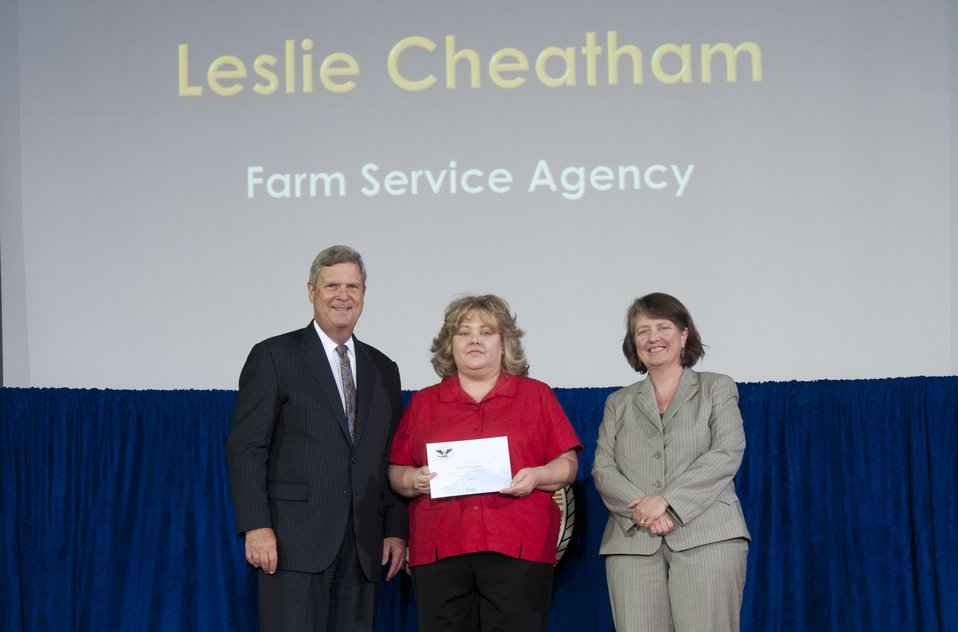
Leslie Cheatham, Farm and Foreign Agricultural Sercive is presented the Gold Presidential Volunteer Service Award by Agriculture Secretary Tom Vilsack and Agriculture Deputy Secretary Kathleen Merrigan at the U.S. Department of Agriculture, 64th Annual Honor Awards Ceremony in the Thomas Jefferson Auditorium, in the South Building, Washington, D.C., on Wednesday, September 12, 2012.